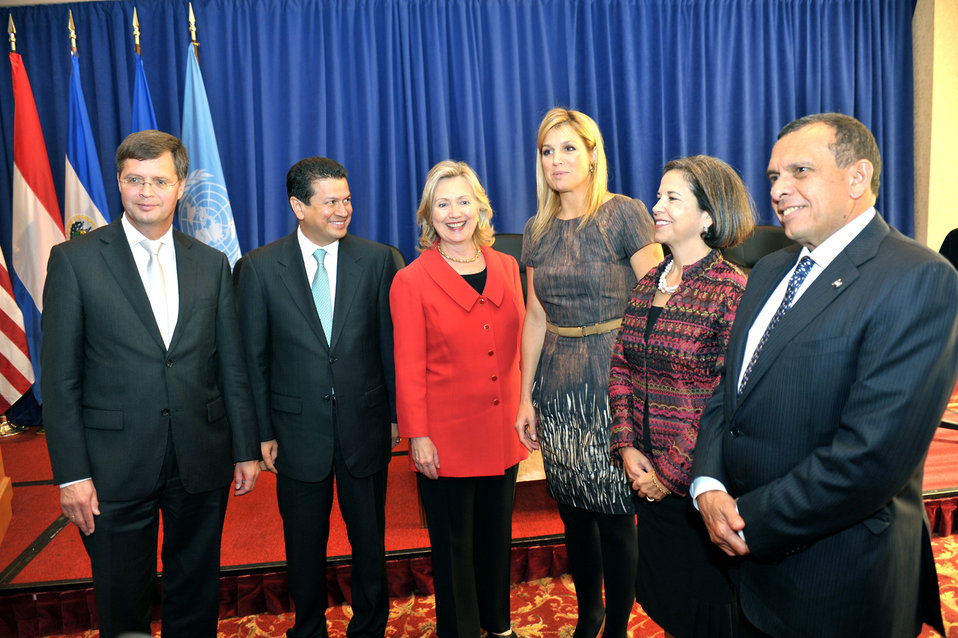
Secretary Clinton Poses for a Photo at the Luncheon on Financial Inclusion

U.S. Secretary of State Hillary Rodham Clinton poses for a photo at the luncheon on “Inclusive Finance: A Path to the MDGs,” hosted jointly by the United States and the Netherlands at the Helmsley Hotel in New York, New York, on September 22, 2010.